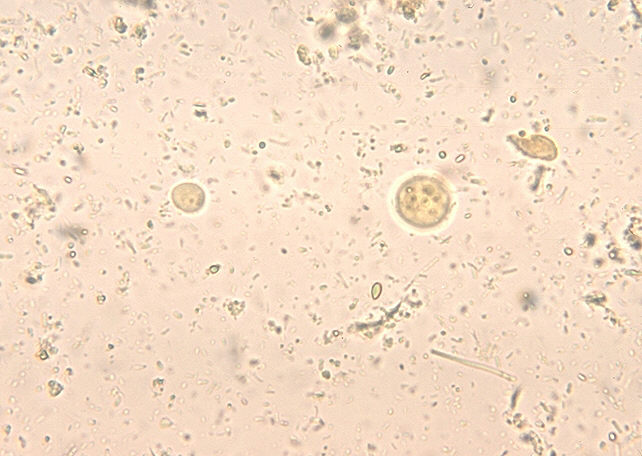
Entamoeba coli. Direct mount, unstained. Parasite, ameba.